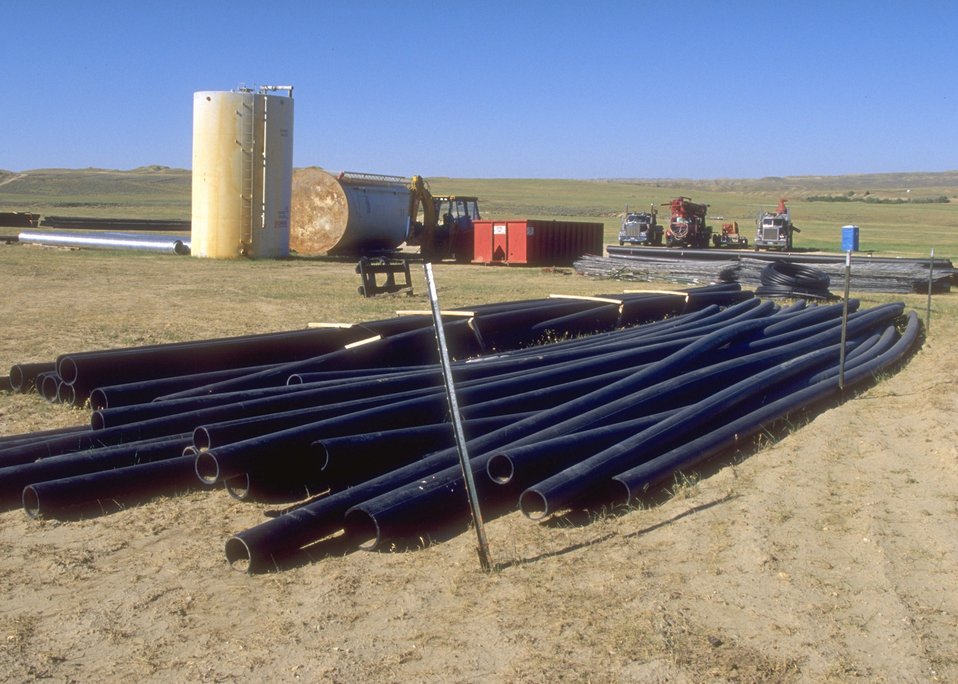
Temporary storage area for coal bed methane development, Buffalo Field Office.